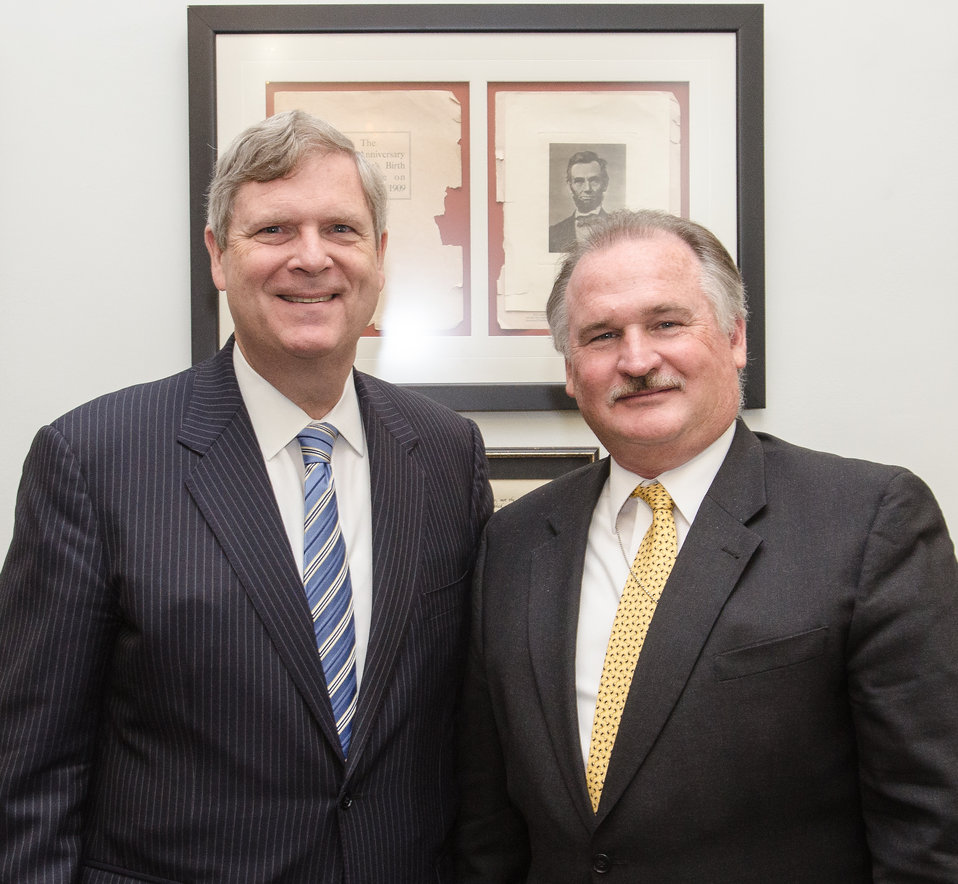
Agriculture Secretary Tom Vilsack (left) meets with National Corn Growers Association President Fred Yoder, at the U.S. Department of Agriculture in Washington, DC, Thursday, April 11, 2013.